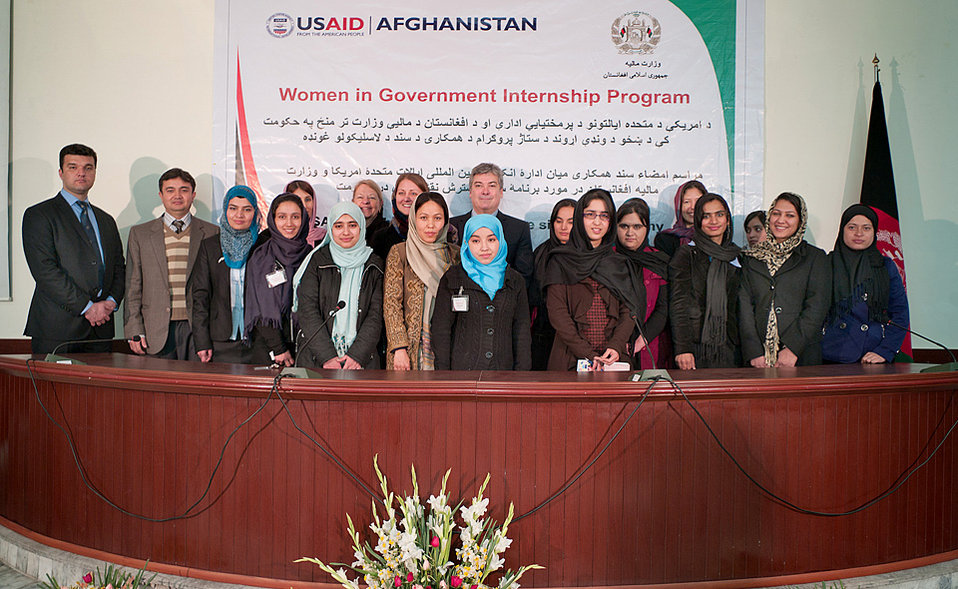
Image 25 3:18:12